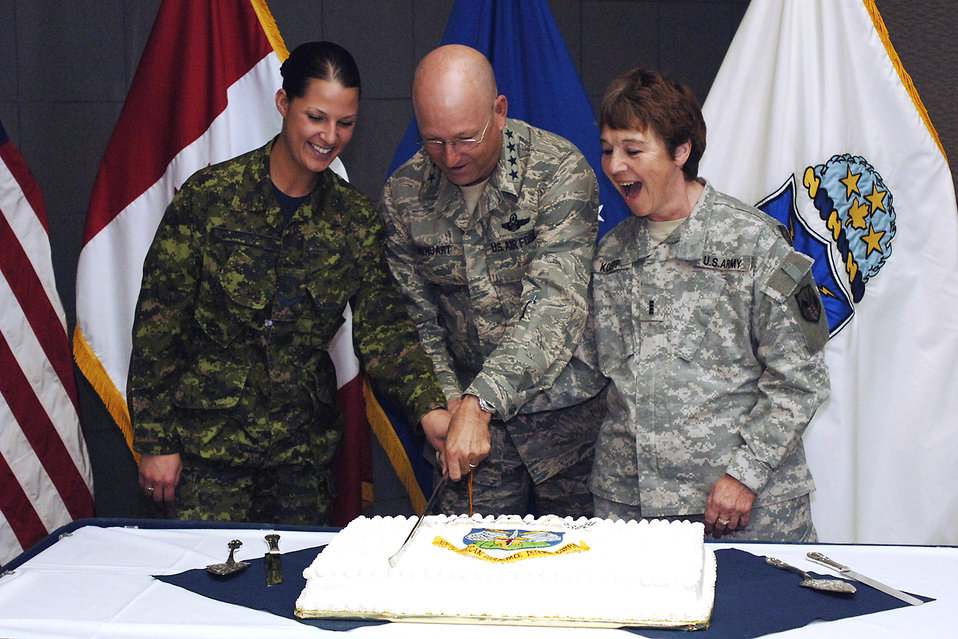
NORAD celebrates 49th birthday

Gen. Victor E. Renuart Jr. cuts the North American Aerospace Defense Command's NORAD's birthday cake with Canadian forces Cpl. Julie Lehoux (left) and Army Chief Warrant Officer 4 Mary Koepp. Canada and the United States signed the NORAD Agreement May 12, 1958. General Renuart is the commander of NORAD and U.S. Northern Command.